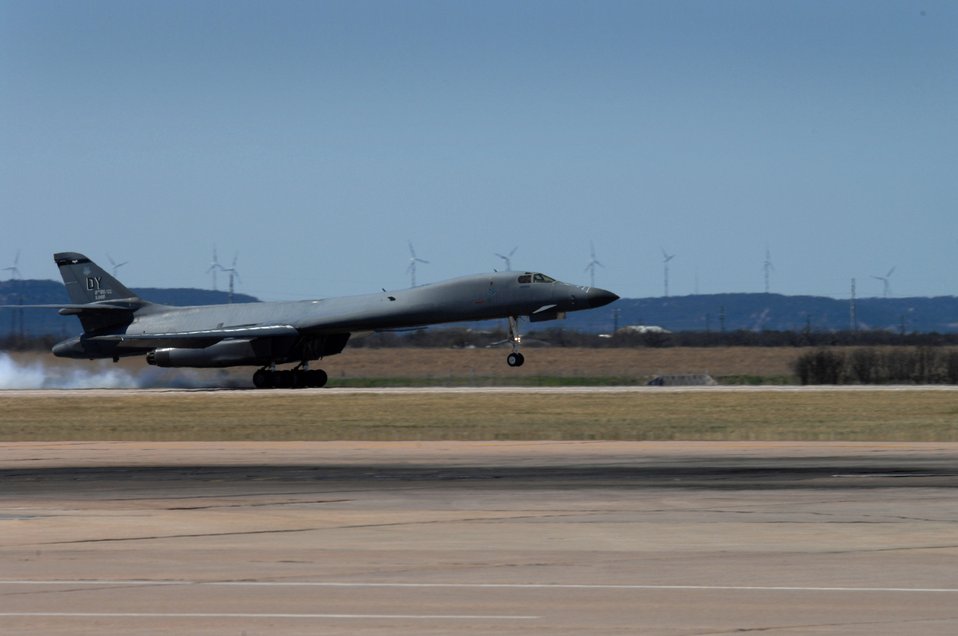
B-1B achieves first supersonic flight using synthetic fuel

A B-1B Lancer lands after becoming the Air Force's first aircraft to fly at the supersonic speed using a 50/50 blend of synthetic and petroleum fuel March 19 at Dyess Air Force Base, Texas. The supersonic flight occured over the White Sands Missile Range airspace in south-central New Mexico, but took off from Dyess AFB.